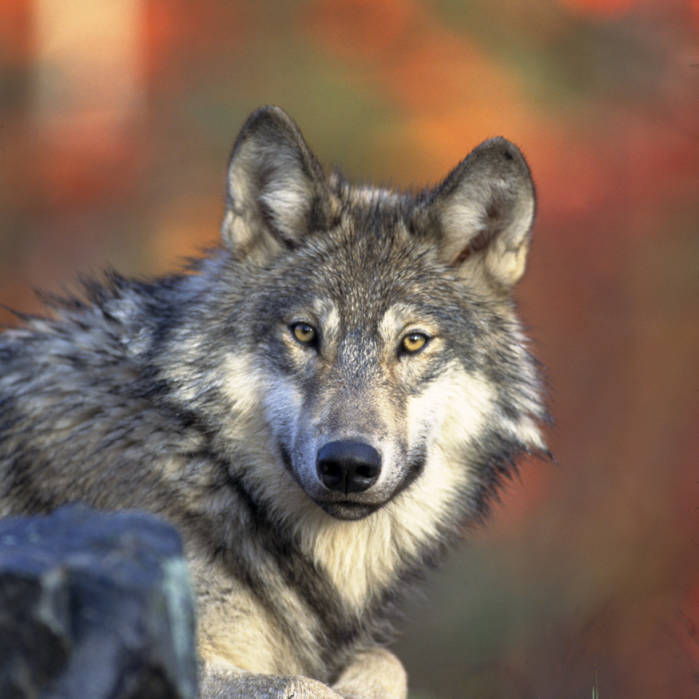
gray wolf